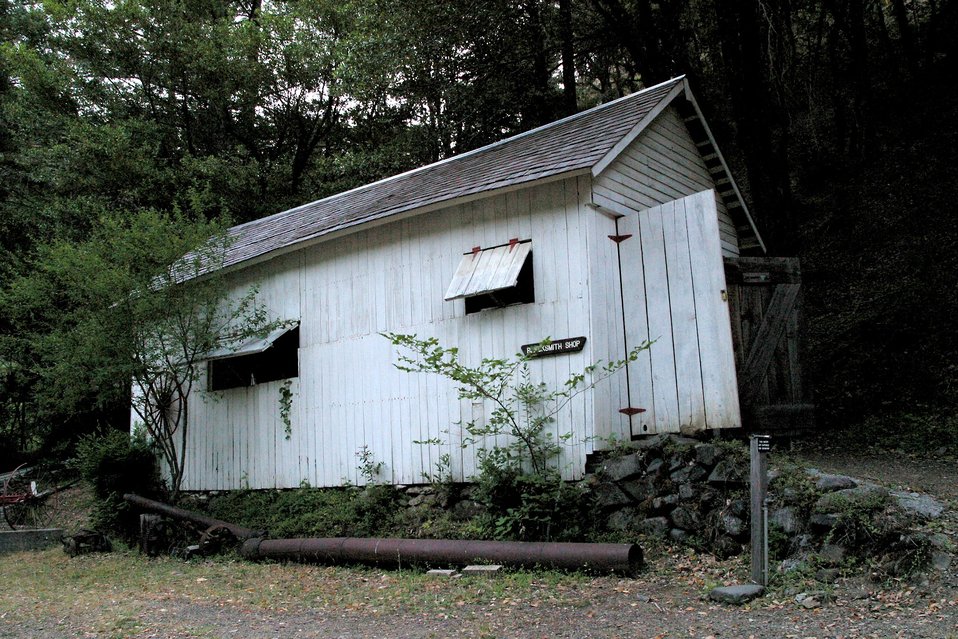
The blacksmith shop at the Rogue River Ranch.